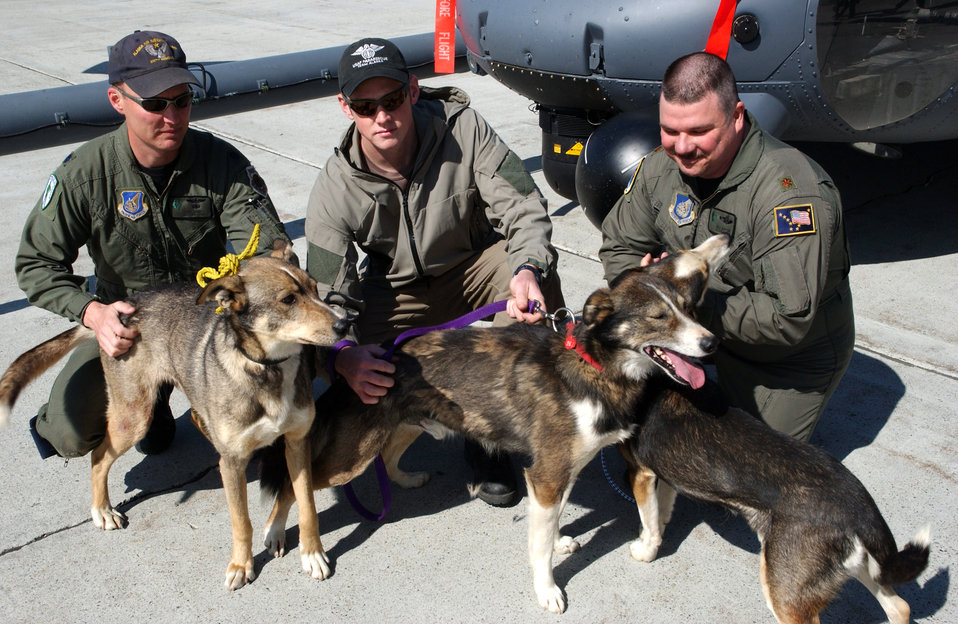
Rescuers go to the dogs

(From left) Lt. Col. Dave Looney, Staff Sgt. Mike Sullivan and Maj. Bill Kupchin accept thanks on Thursday, June 1, 2006, from three of the 89 dogs they rescued during the Yukon Quest International Sled Dog Race in February. The dogs and six mushers were stranded at Eagle Summit during a snowstorm. Colonel Looney and Sergeant Sullivan are with the Alaska Air National Guard's 176th Wing at Kulis ANG Base in Anchorage. Major Kupchin is commander of Det. 1 of the 210th Rescue Squadron at Eielson Air Force Base, Alaska.